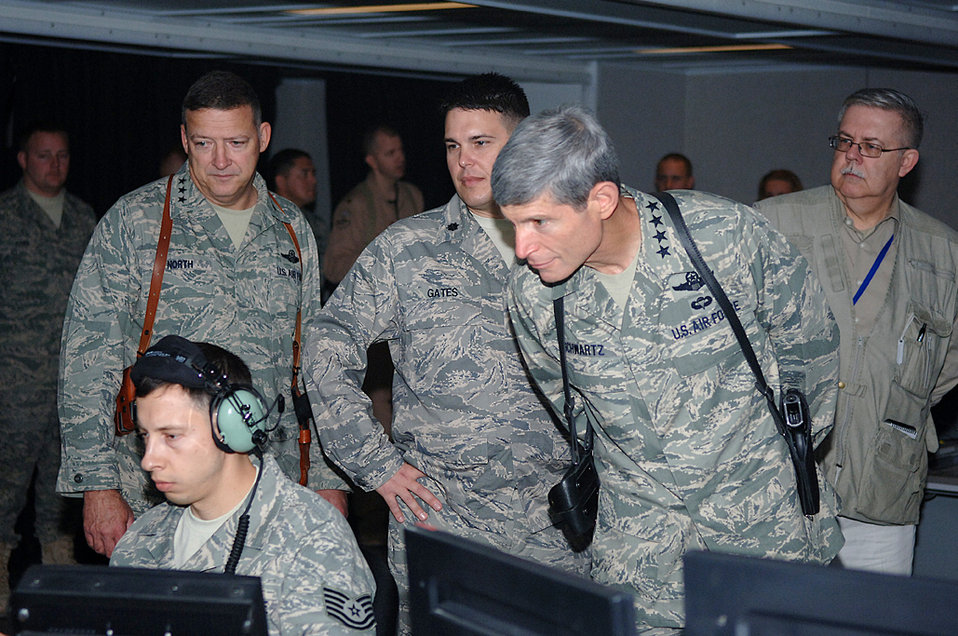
Chief of staff wraps up Middle East tour at Joint Base Balad

Air Force Chief of Staff Gen. Norton Schwartz and U.S. Air Forces Central Commander Lt. Gen. Gary North observe an Airman at work in the 727th Expeditionary Air Control Squadron. Also present are Lt. Col. Bryan Gates, 727th EACS commander, and foreign policy adviser Donald Bishop. The 727th EACS, also known as